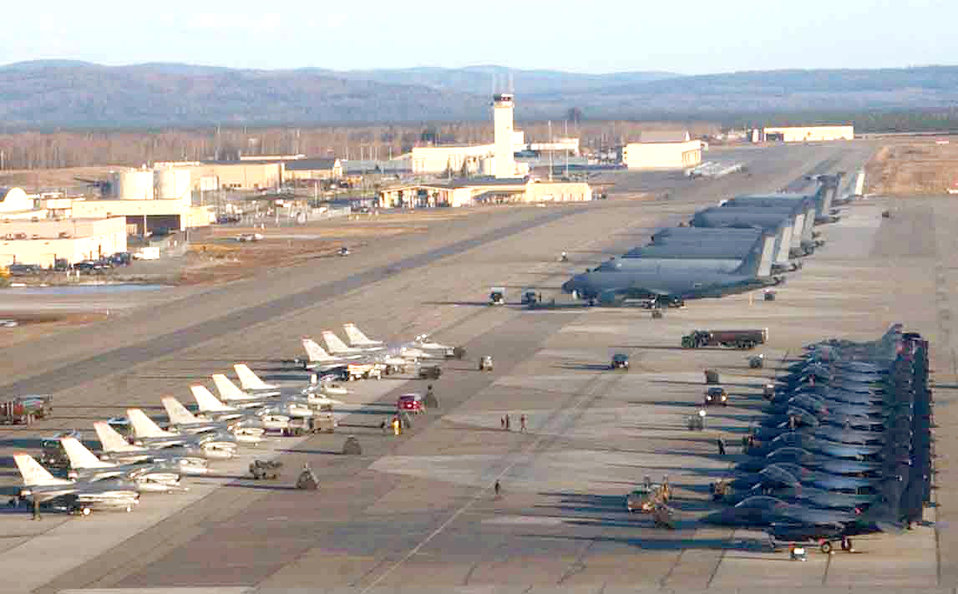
Cope Thunder wraps in Alaska

EIELSON AIR FORCE BASE, Alaska -- Aircraft sit on the flightline during Cope Thunder. The annual exercise involves nine units and about 1,000 Airmen and 50 aircraft from Pacific Air Forces, Air Combat Command and the Air National Guard.